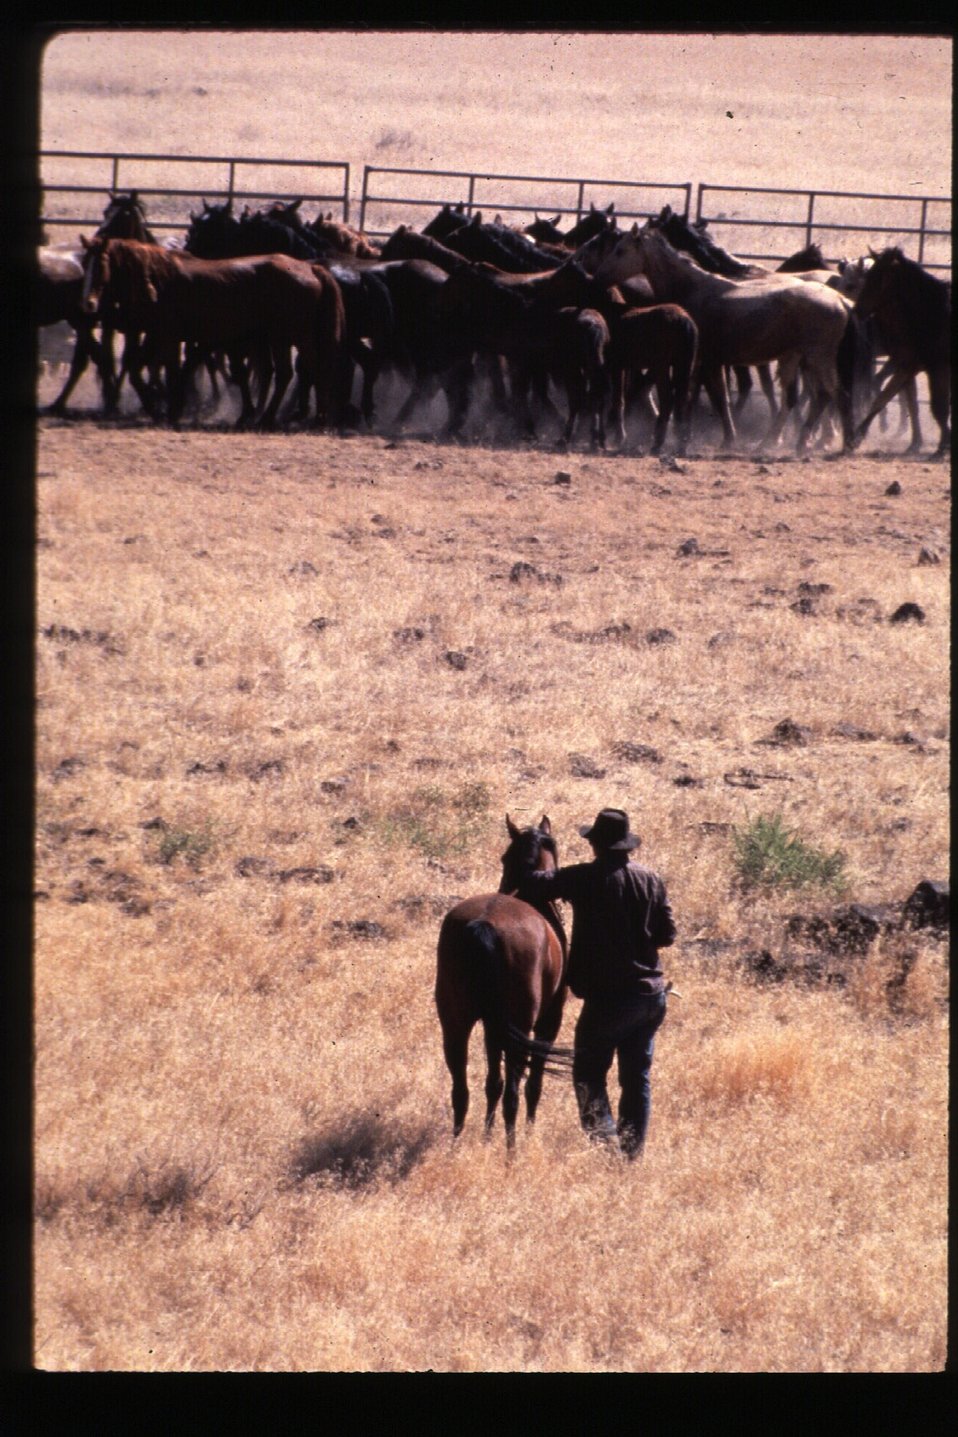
Wild Horse and Burro roundup Vale District Oregon Cowboys LSRD Lower Snake River District